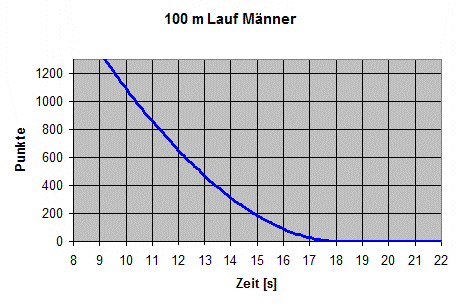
Deutsch: Diagramm Punktewertung 100m-Lauf Männer nach IAAF-Formel